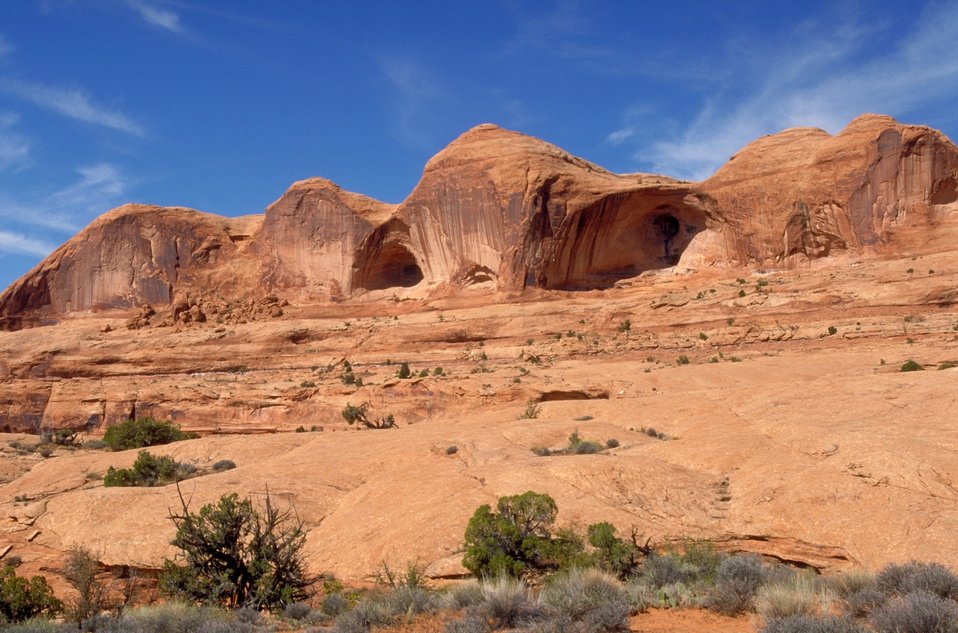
Slickrock showing cat eyes on trail to Corona and Bowtie arches near Moab, Utah.